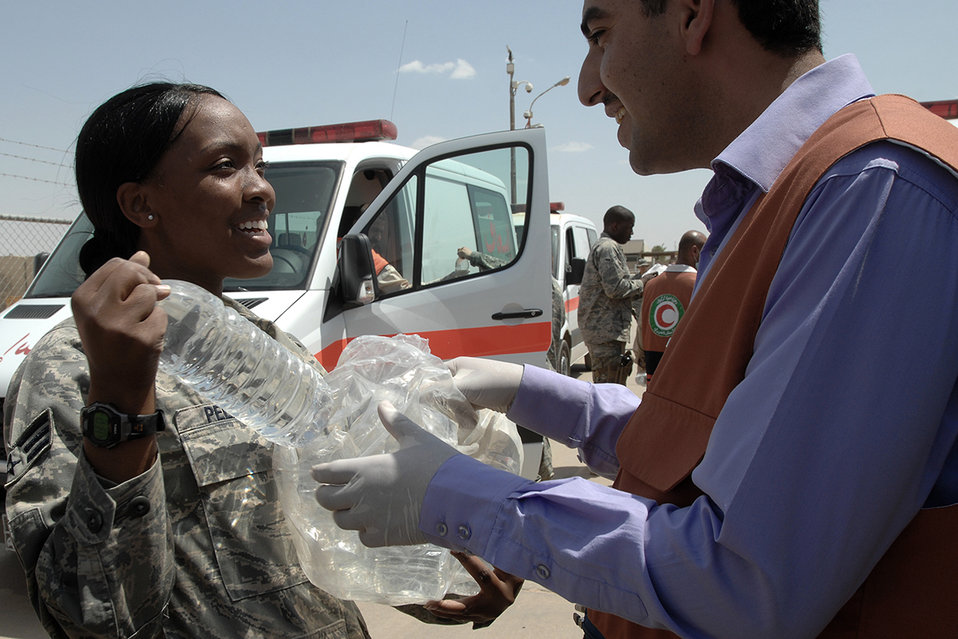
Coalition forces, Kirkuk officials partner to care for bombing victims

Senior Airman Latrisha Peebles gives a bottle of water to an Iraqi ambulance driver June 22 at Kirkuk Air Base, Iraq. U.S. and Turkish airmen, U.S. State Department officials at the Kirkuk Provincial Reconstruction Team, and Turkish Red Crescent Society medical responders helped coordinate and facilitate an aeromedical evacuation for 11 victims of a June 20 suicide truck bombing in Taza District south of Kirkuk city. More than 80 people were killed and 250 injured in the blast. Airman Peebles is a 506th Expeditionary Civil Engineer Squadron force protection member. The St. Louis native is deployed from Aviano Air Base, Italy.